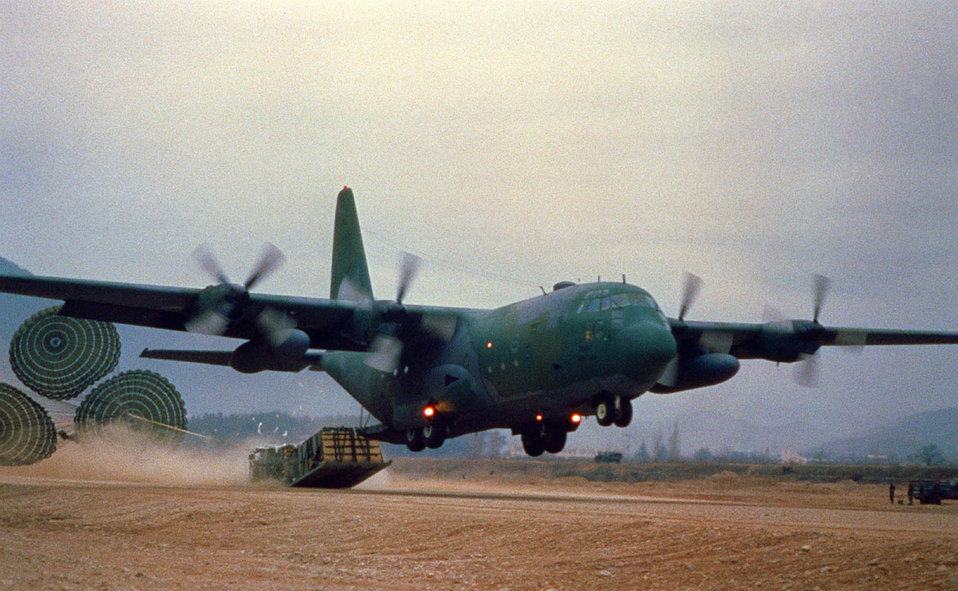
Combat drop

FILE PHOTO -- A C-130 Hercules combat drops cargo during an exercise. The Hercules primarily performs the intratheater portion of the airlift mission. The aircraft is capable of operating from rough, dirt strips and is the prime transport for paradropping troops and equipment into hostile areas. Four decades have elapsed since the Air Force issued its original design specification, yet the remarkable C-130 remains in production.